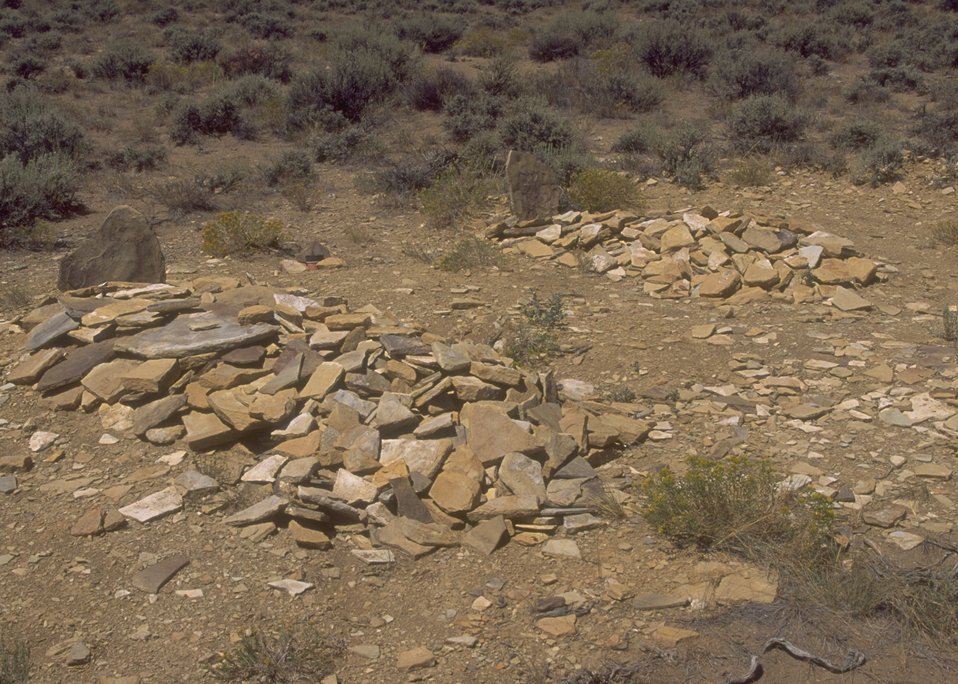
Location of original grave sites (remains have been relocated) at the Indian Emigrant relations interpretive area along the Oregon Trail, Rock Springs Field Office.